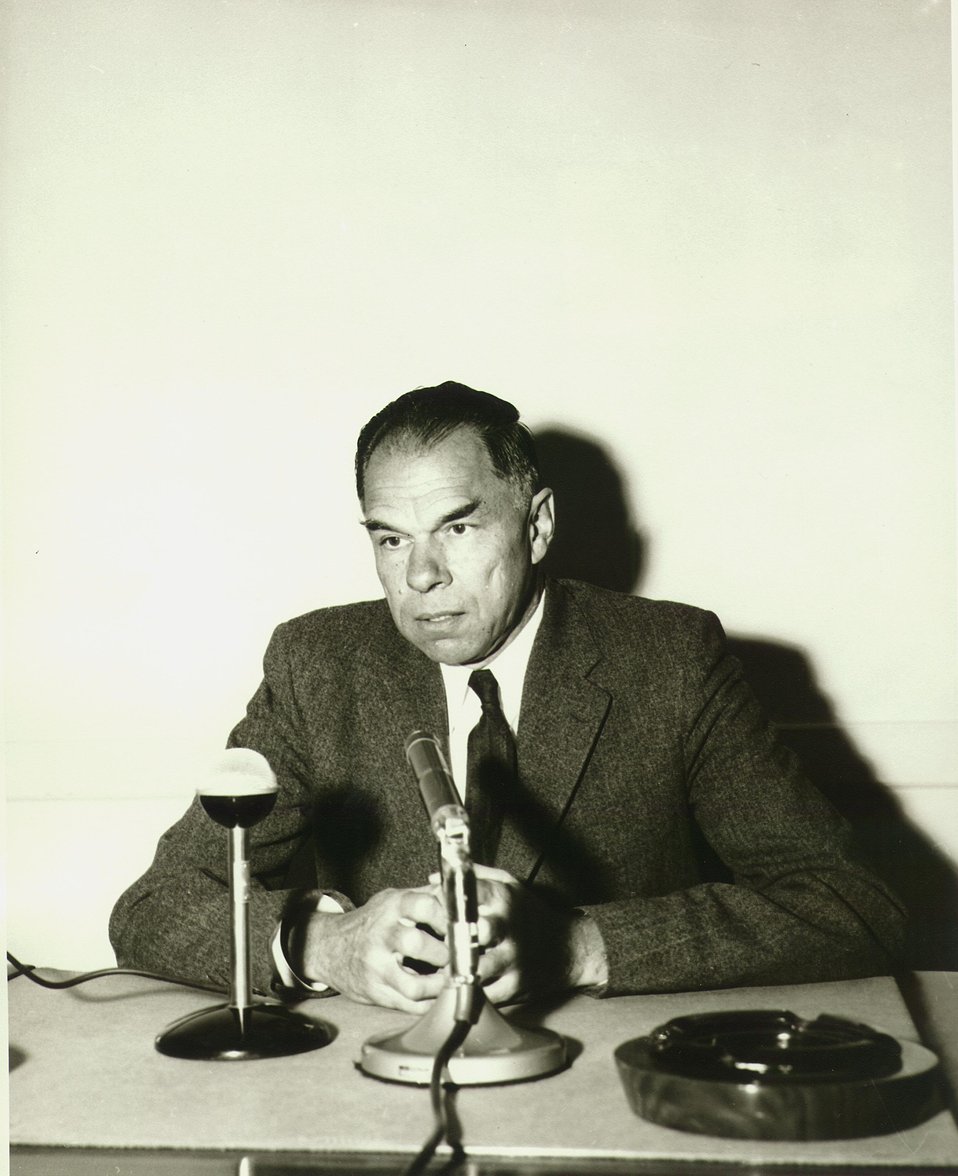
Fermi Award Ceremony for Dr. Seaborg on Dec. 2, 1959.